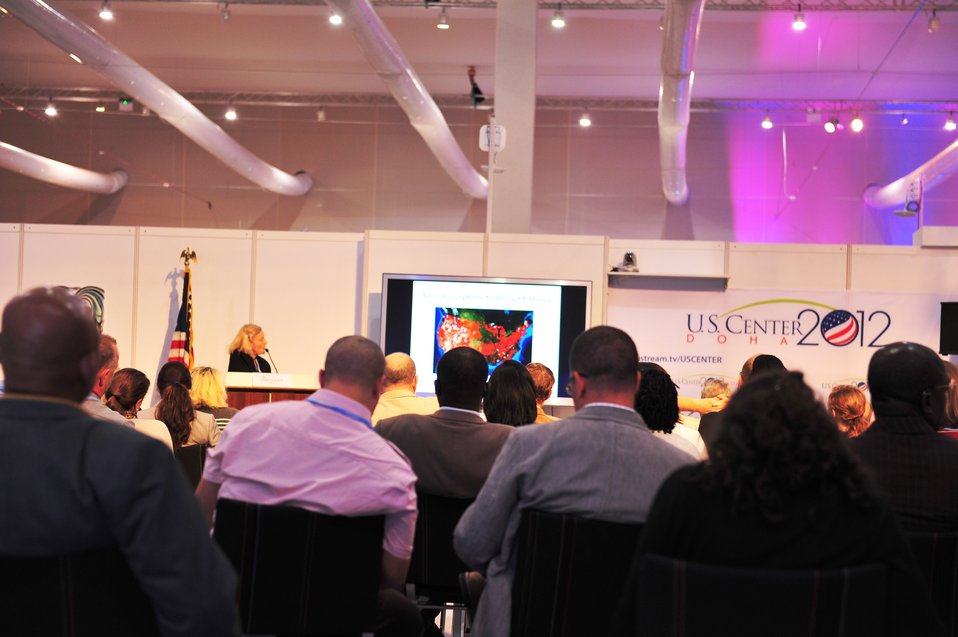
Dr. Olson Discusses Drought Resistant Crops

Dr. Carolyn Olson of the U.S. Department of Agriculture (USDA) gives a presentation on Drought Resistant Crops at the U.S. Center at the 18th Session of the Conference of the Parties to the UN Framework Convention on Climate Change (COP-18) in Doha, Qatar, November 28, 2012.